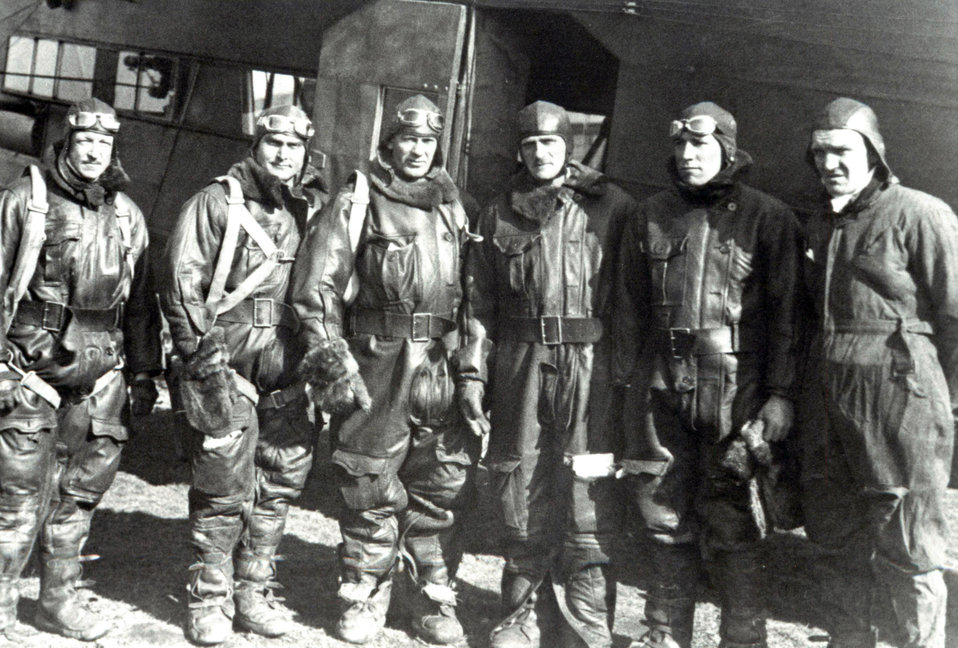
Flight of the Question Mark

Pictured is the crew of the